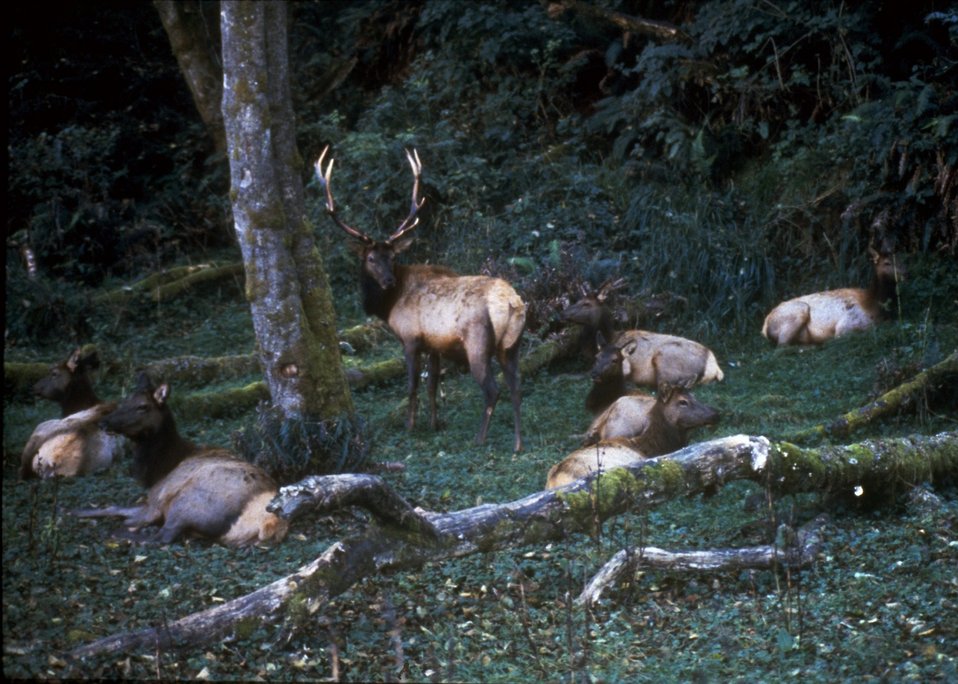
Elk are just laying around.